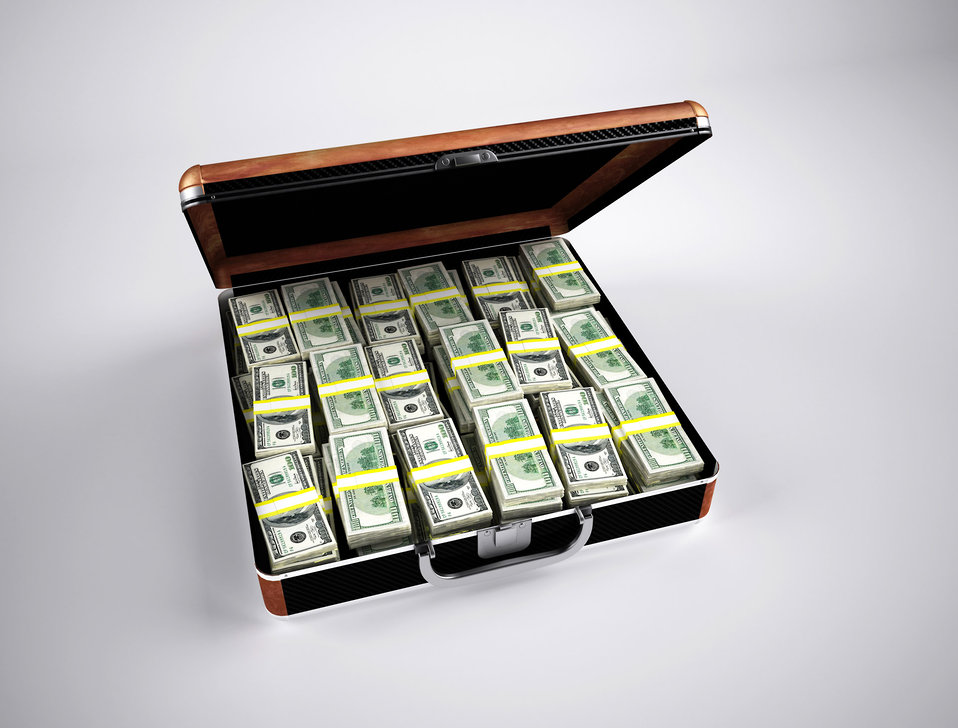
Briefcase with a million dollars

Briefcase full of 100 dollar bills in packs in high definition.